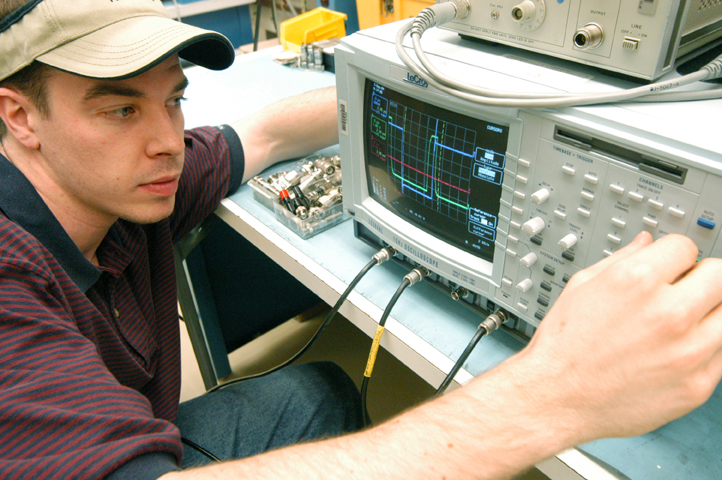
Air Force officials trim oscilloscope inventory

ROBINS AIR FORCE BASE, Ga. -- Greg Bookhardt calibrates a Lecroy digital oscilloscope which is used to test equipment on aircraft and ground radar systems. During the next three years, the Air Force will reduce the number of oscilloscope models from 190 to three. Mr. Bookhardt is a precision measurement equipment laboratory technician here.